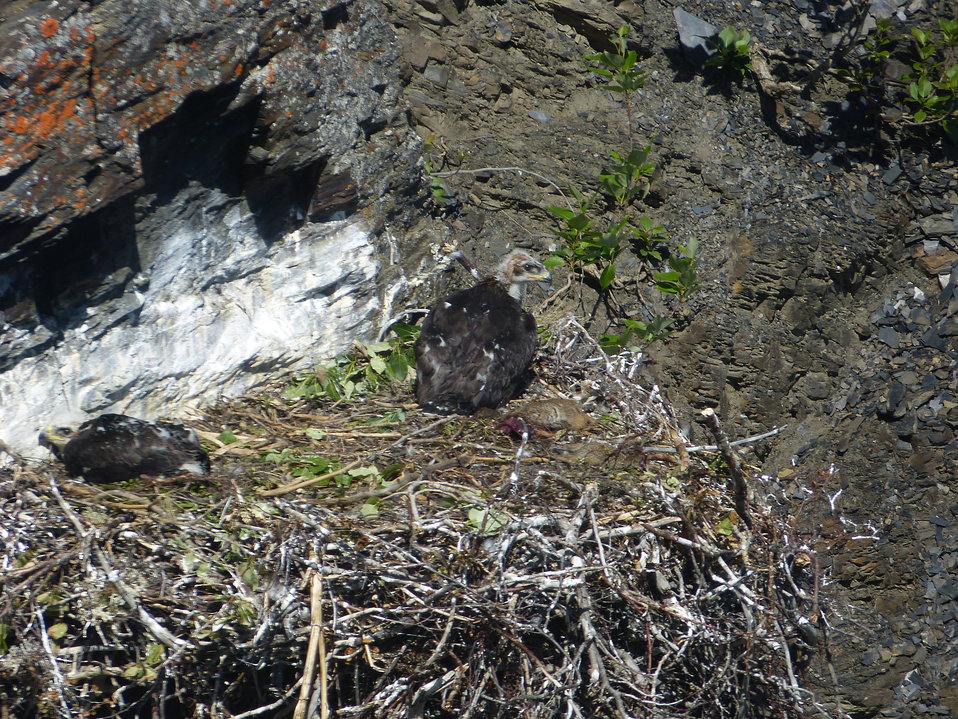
Golden Eagle nest, Kilbuck Mountains, Yukon Delta National Wildlife Refuge

Photo by: Kristine Sowl,
USFWS, Yukon Delta NWR, July 10, 2013